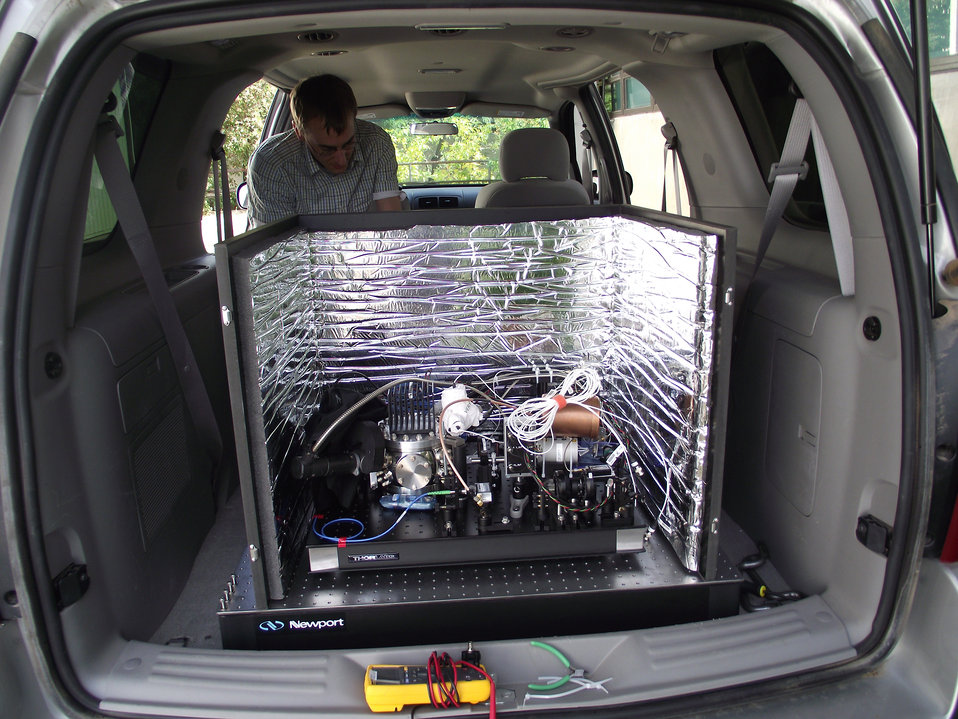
Laser; David Leibrandt

NIST researcher David Leibrandt tests the stability of an advanced laser in a minivan. The laser and related instruments are inside the box, which is 2 by 2 by 2.5 feet in size. The stainless steel cylinder at the lower left contains the optical cavity used to stabilize the laser, which is hidden behind the cylinder.